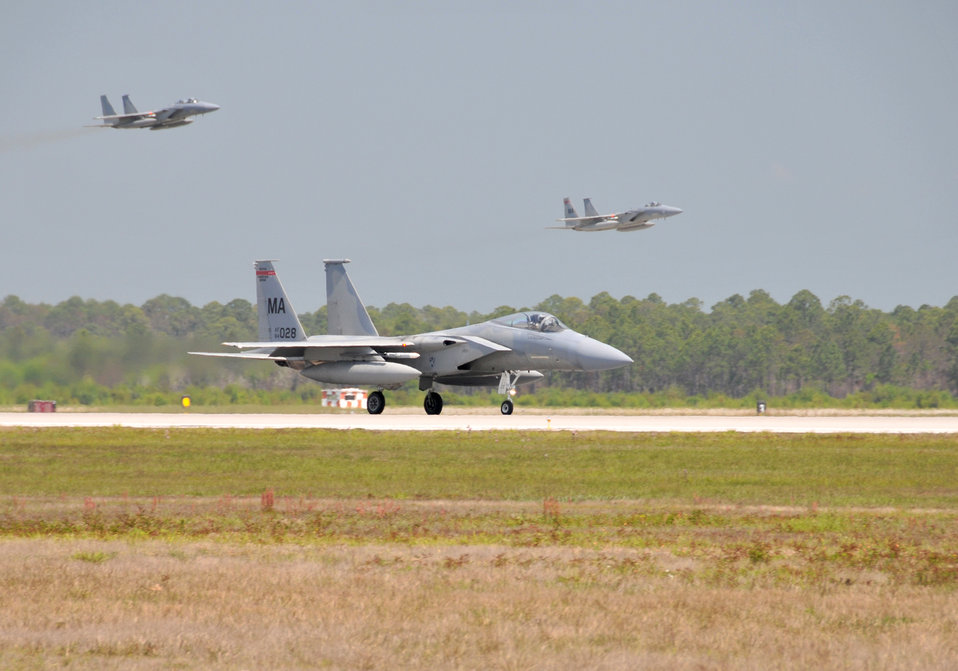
Guard unit in Florida for WSEP

F-15 Eagles from the Massachusetts Air National Guard‘s 104th Fighter Wing arrive at Tyndall Air Force Base, Fla., April 9, 2011, to participate in the Weapons System Evaluation Program there. The two-week training and evaluation program is important for ground crews to test their maintenance systems and processes while loading live munitions on the fighters. The WSEP also provides live training for the F-15 pilots to employ air-to-air missiles against remotely piloted target drones in flight.